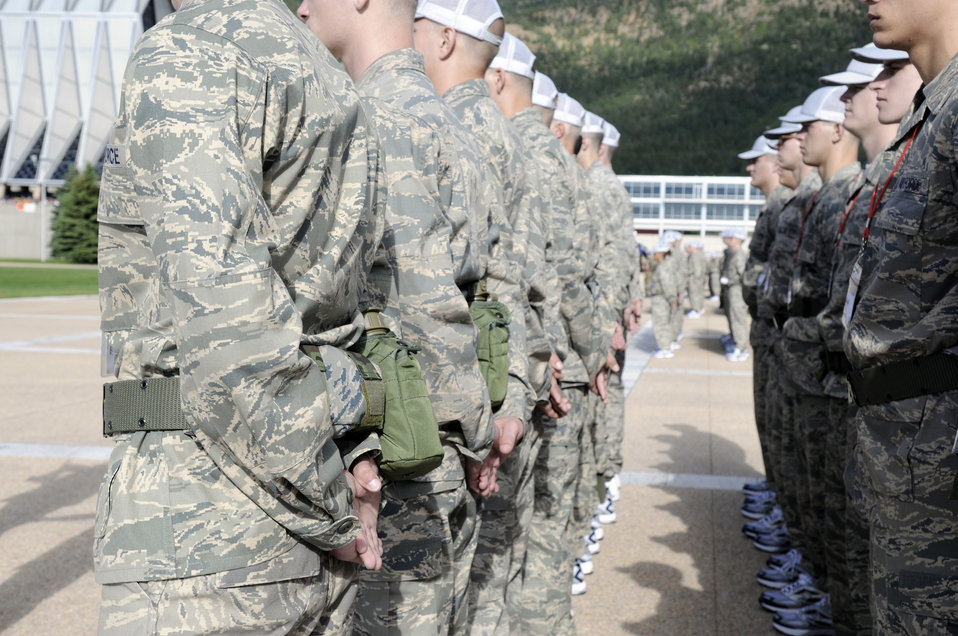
Welcome to the Academy

Basic cadets stand at the position of parade rest prior to the start of their first reveille formation June 26 at the U.S. Air Force Academy in Colorado Springs, Colo.